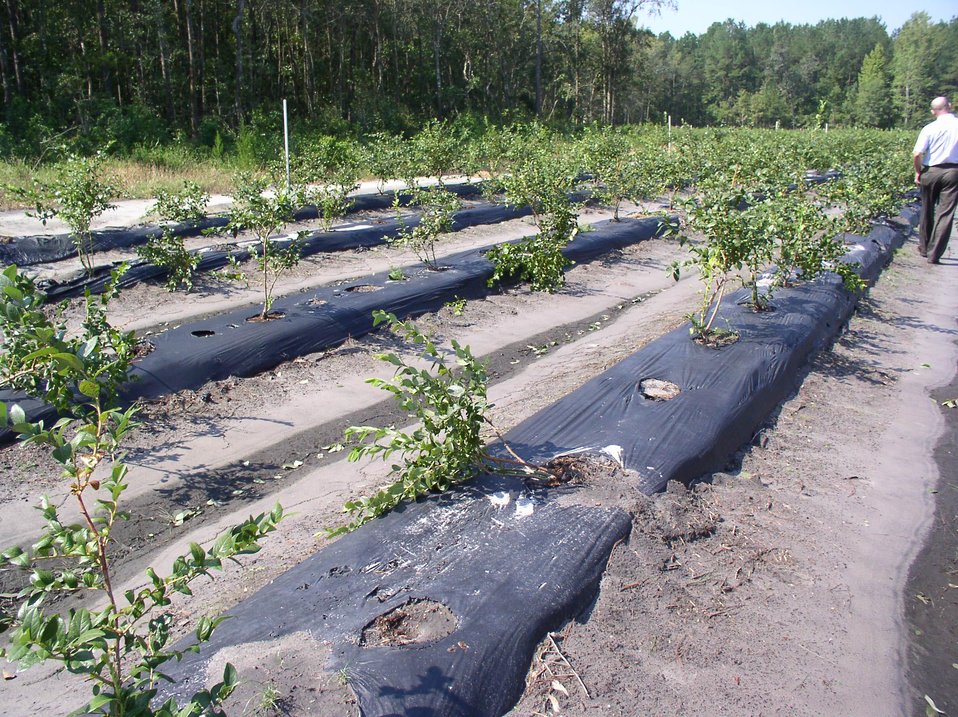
Blueberry crop damage caused by Hurricane Irene in Pender County, NC, on Monday 29, 2011.